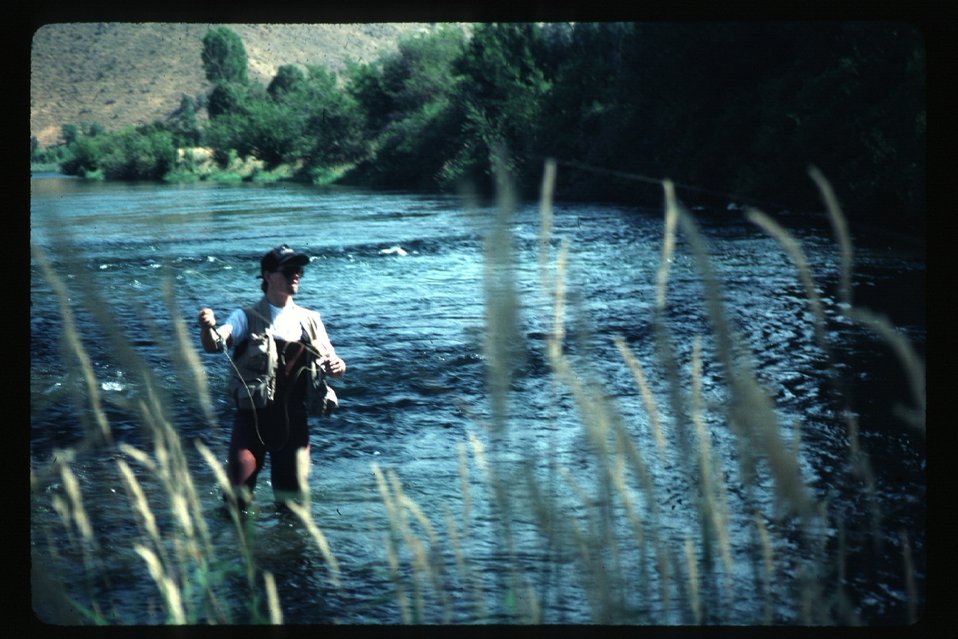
Fly fishing South Fork of Snake River Idaho Falls Field Office USRD Upper Snake River District